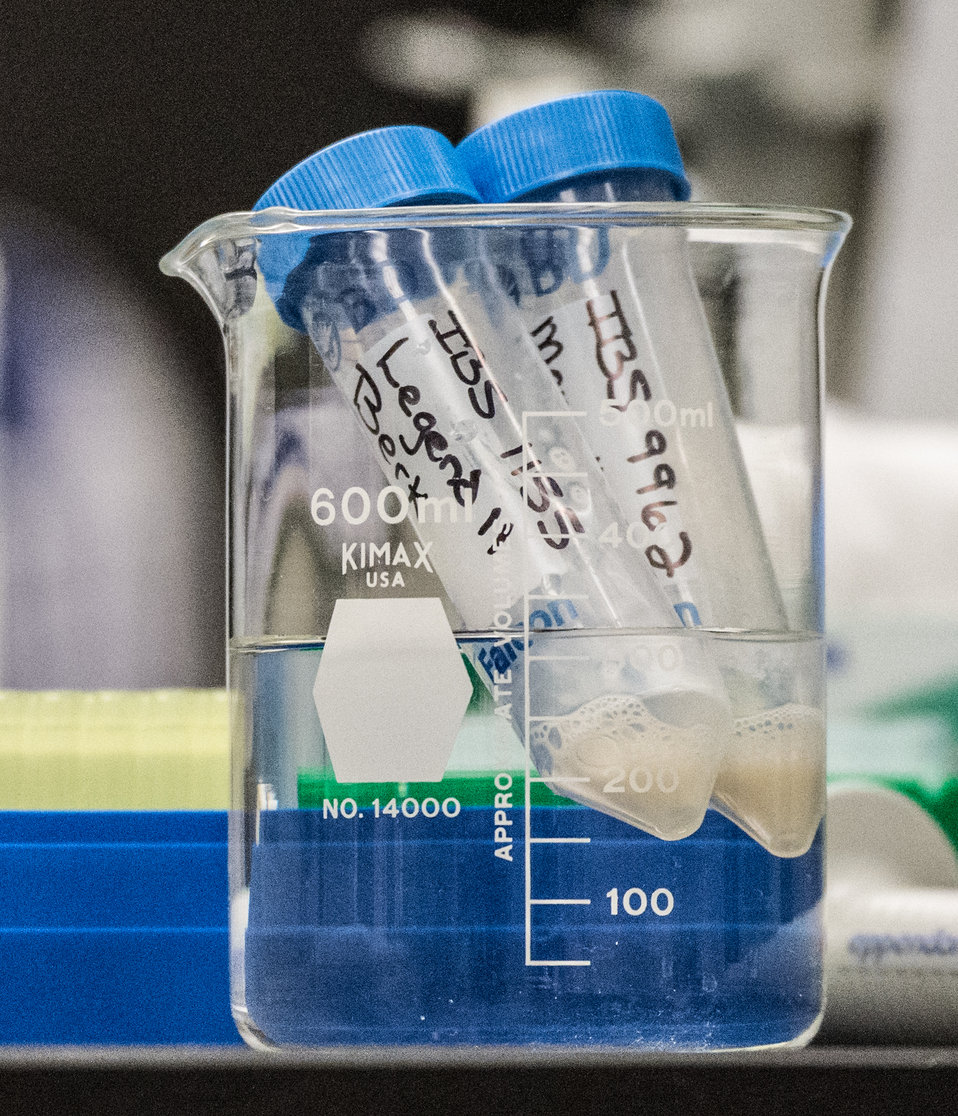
Samples of Boar sperm are brought up to temperature for scanning by an electronic microscope to evaluate their mortality, at the U.S. Department of Agriculture (USDA), Agriculture Research Service (ARS), National Center for Genetic Resources Preservation (NCGRP), in Ft. Collins, CO, on Wednesday, Nov. 6, 2013.